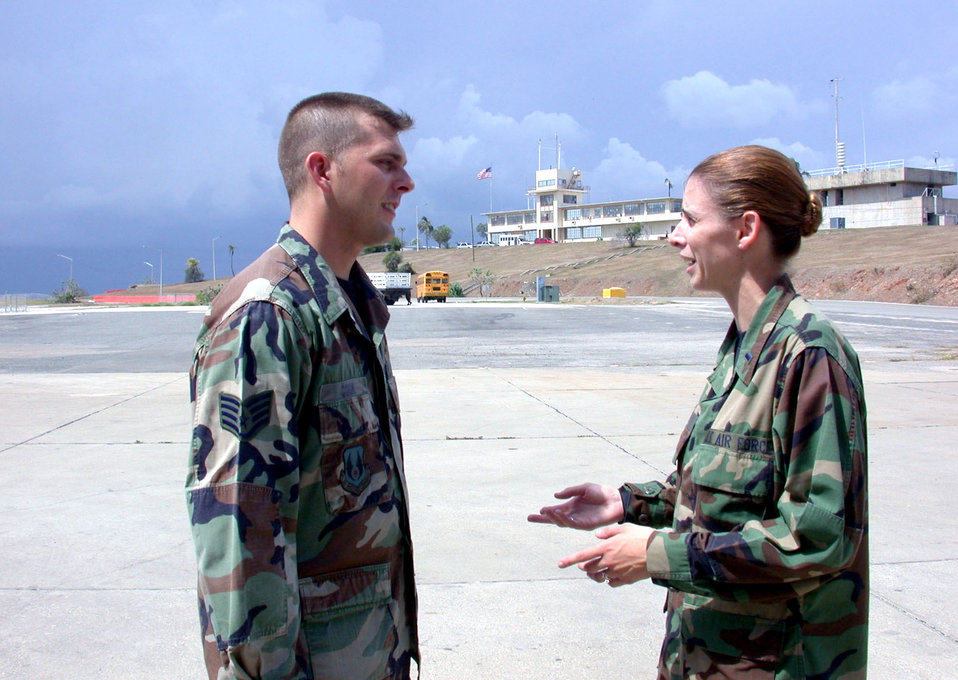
Cook and Lyons

U.S. NAVAL BASE GUANTANAMO BAY, Cuba -- Staff Sgt. Todd Cook (left) and 1st Lt. Audra Lyons are two of a handful of airmen supporting Joint Task Force-Guantanamo. Both are deployed from Wright-Patterson Air Force Base, Ohio., and work in the Joint Personnel Reception Center here.